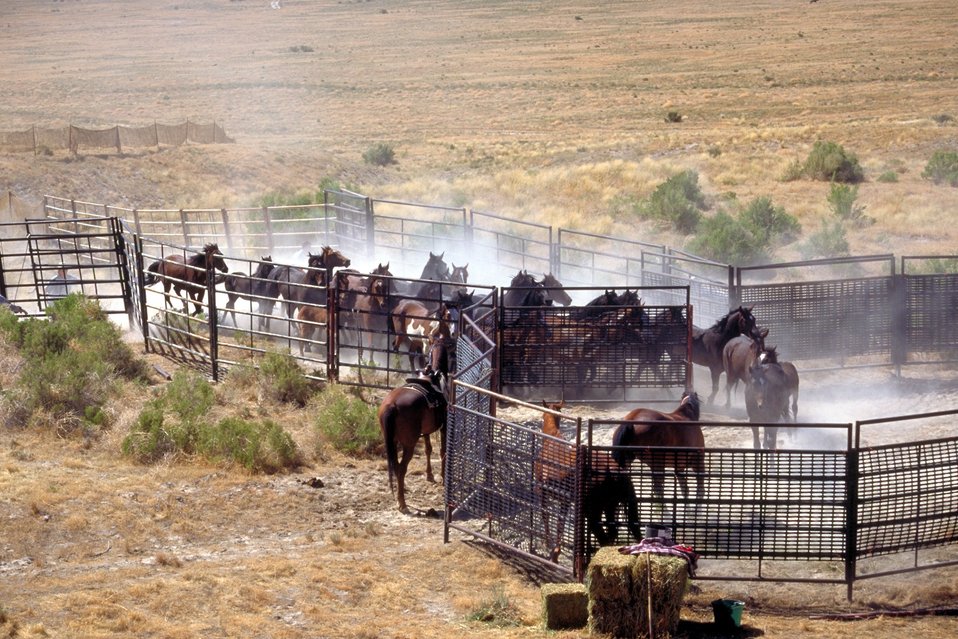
Wild Horse gather, Cedar Mountains.